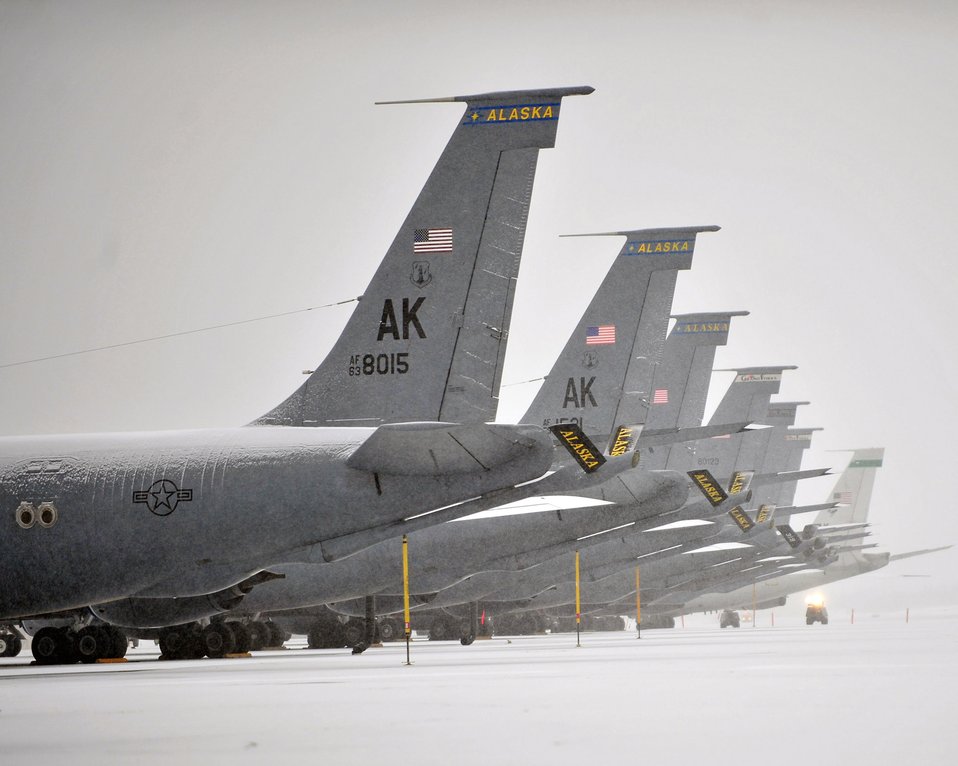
Wintery blast

On the flight line at Eielson Air Force Base, Alaska, KC-135 Stratotankers bear the brunt of a winter storm March 27, 2009, alongside Stratotankers from Grand Forks AFB. Airmen from Grand Forks are on temporary duty at Eielson.